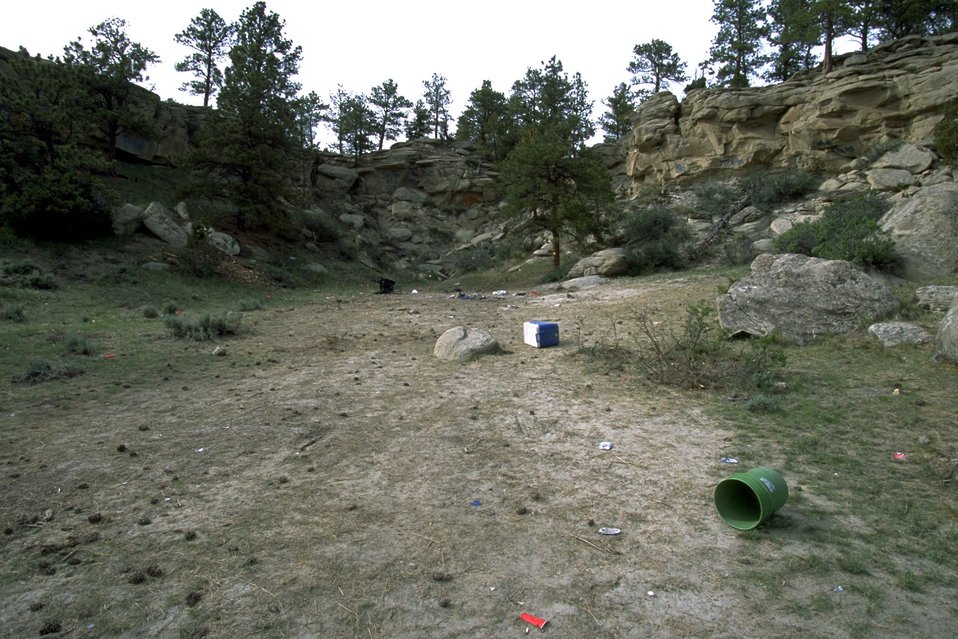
Trash in an illegal ""kegger"" area in the Acton Recreation Area